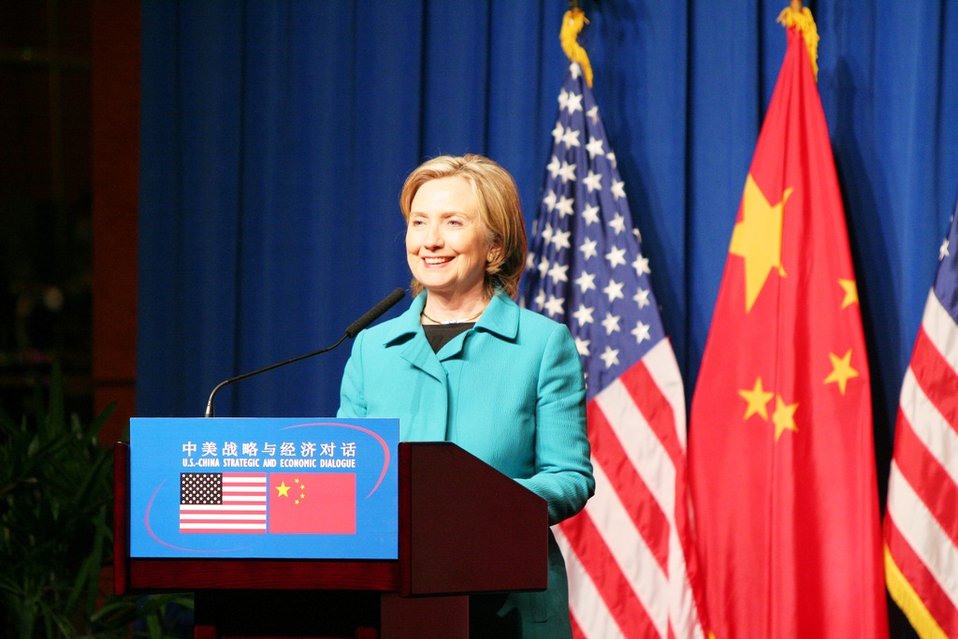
Secretary Clinton Delivers Remarks at Joint Press Availability

U.S. Secretary of State Hillary Rodham Clinton and U.S. Secretary of the Treasury Timothy F. Geithner hold a joint press availability, in Beijing, China, following the conclusion of the U.S.-China Strategic and Economic Dialogue on May 25, 2010.